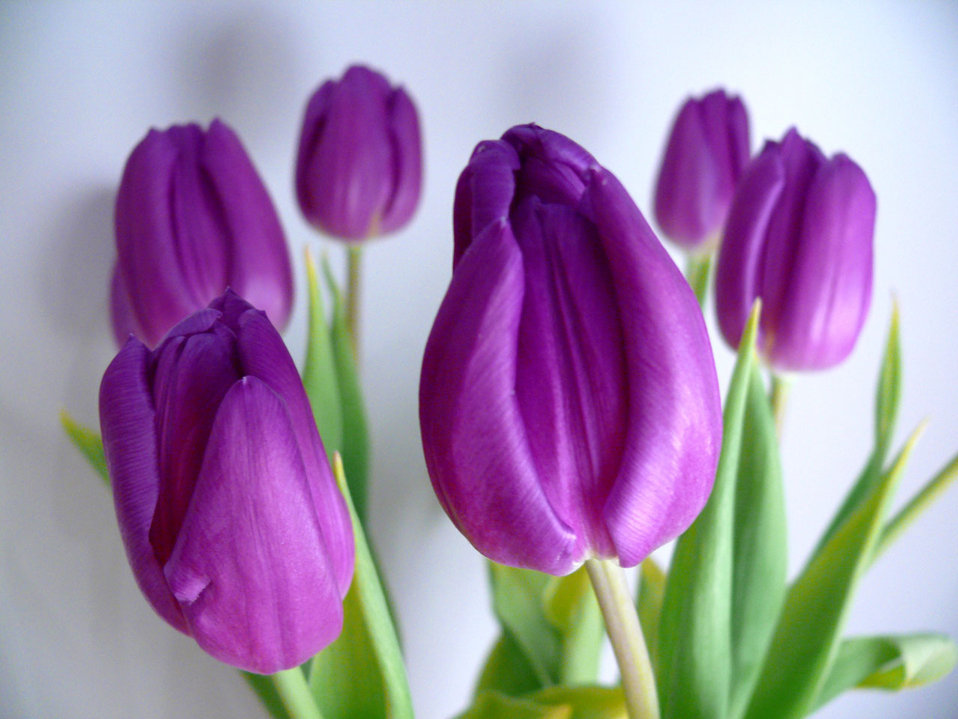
Tulips in the vase.